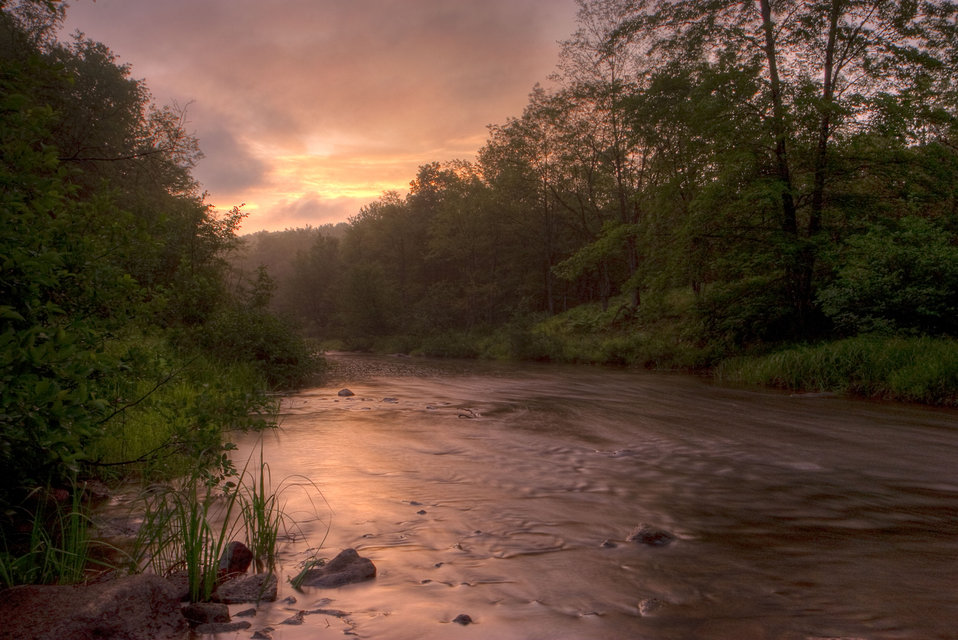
Blackwater River on Beall Trail at Canaan Valley National Wildlife Refuge.